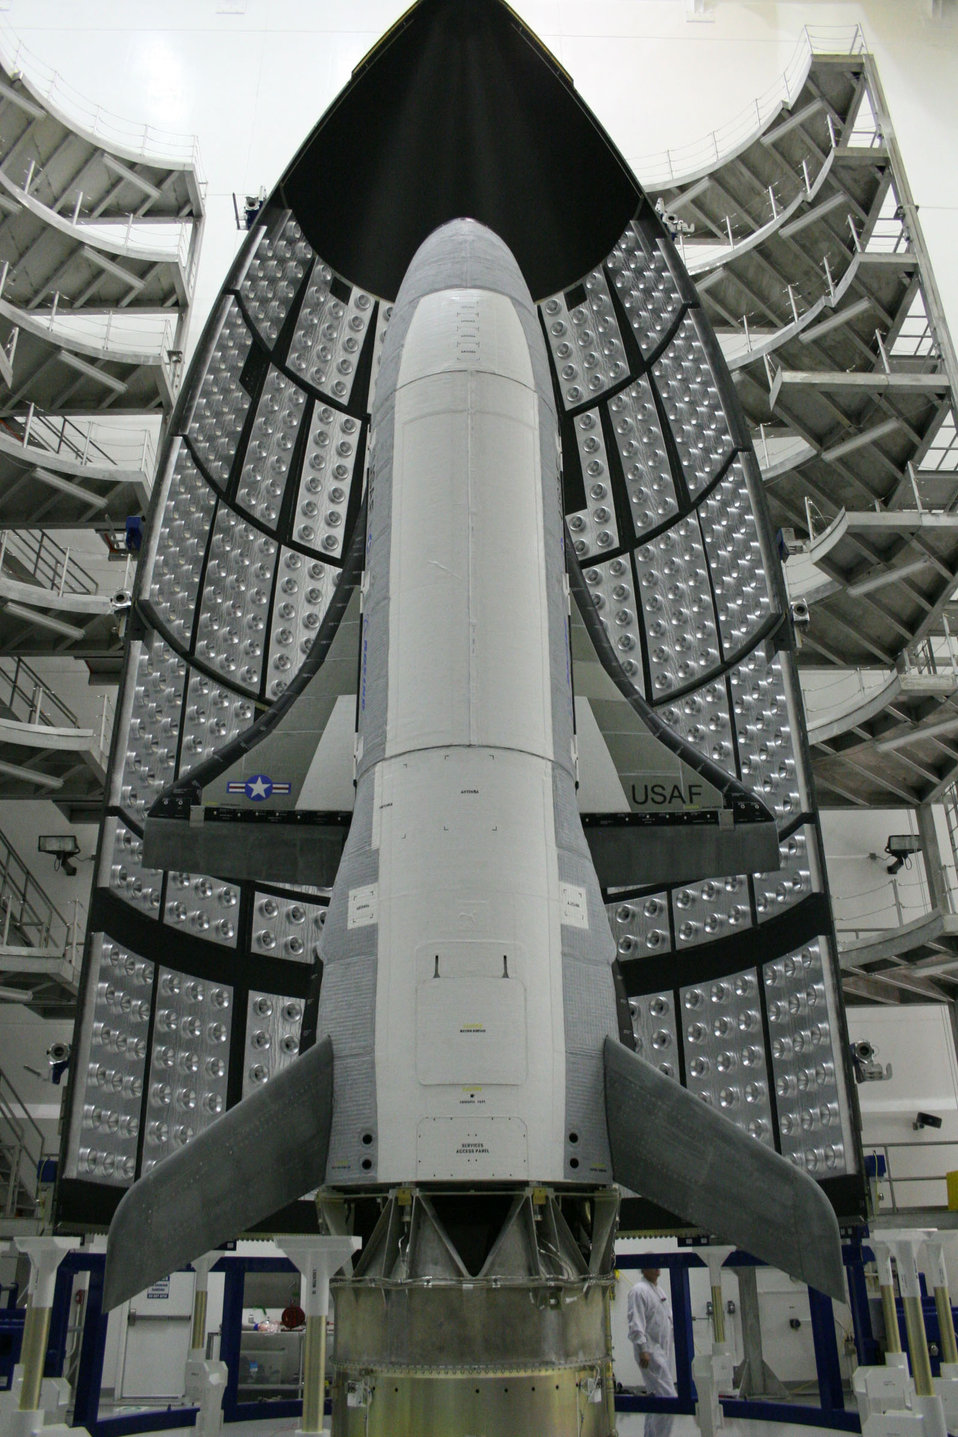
X-37 Orbital Test Vehicle

The first X-37B Orbital Test Vehicle waits in the encapsulation cell of the Evolved Expendable Launch vehicle April 5, 2010, at the Astrotech facility in Titusville, Fla. Half of the Atlas V five-meter fairing is visible in the background.